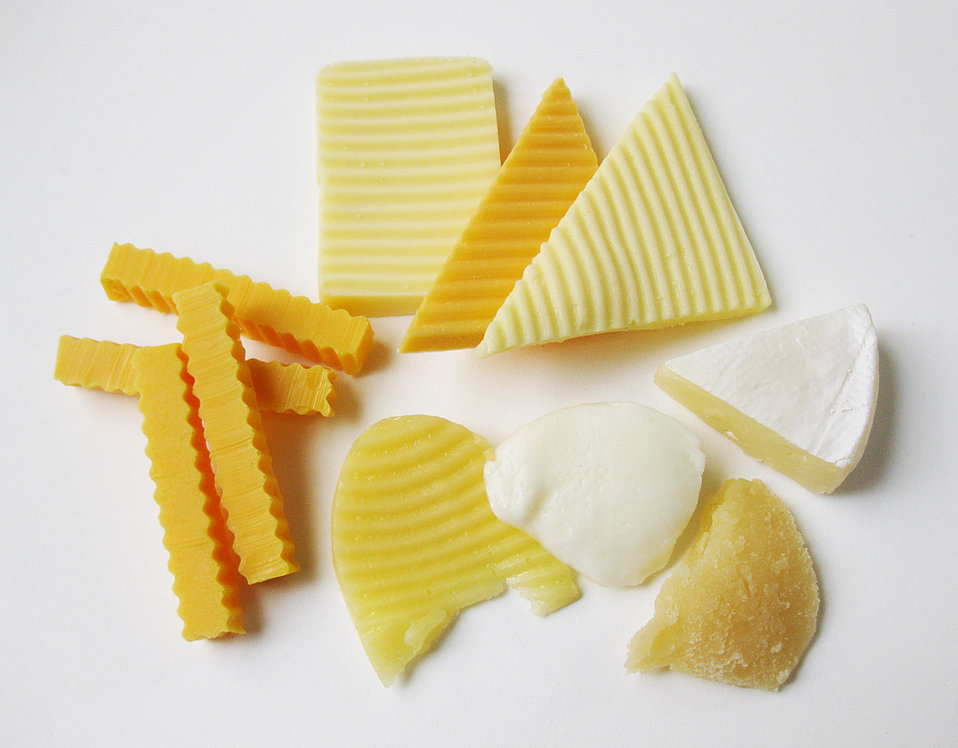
Some kind of cheese.